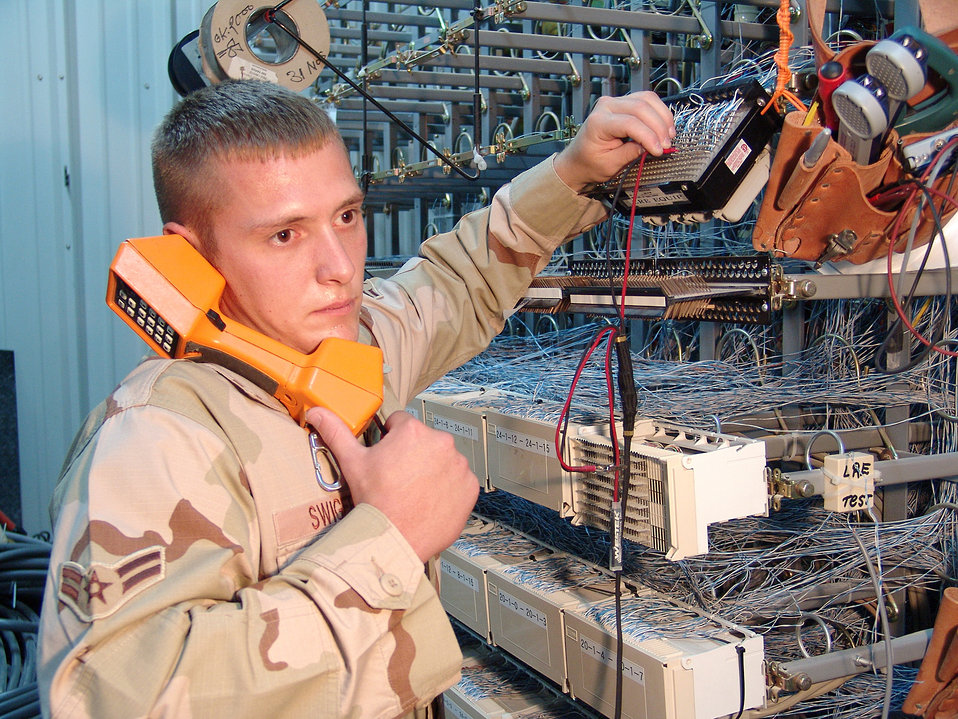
Operation IRAQI FREEDOM

SOUTHWEST ASIA -- Airman 1st Class Jason Swiger verifies a dial tone on individual phone lines after a recent telephone switch software upgrade. Airman Swiger is deployed to the 386th Expeditionary Communications Squadron from Hill Air Force Base, Utah.